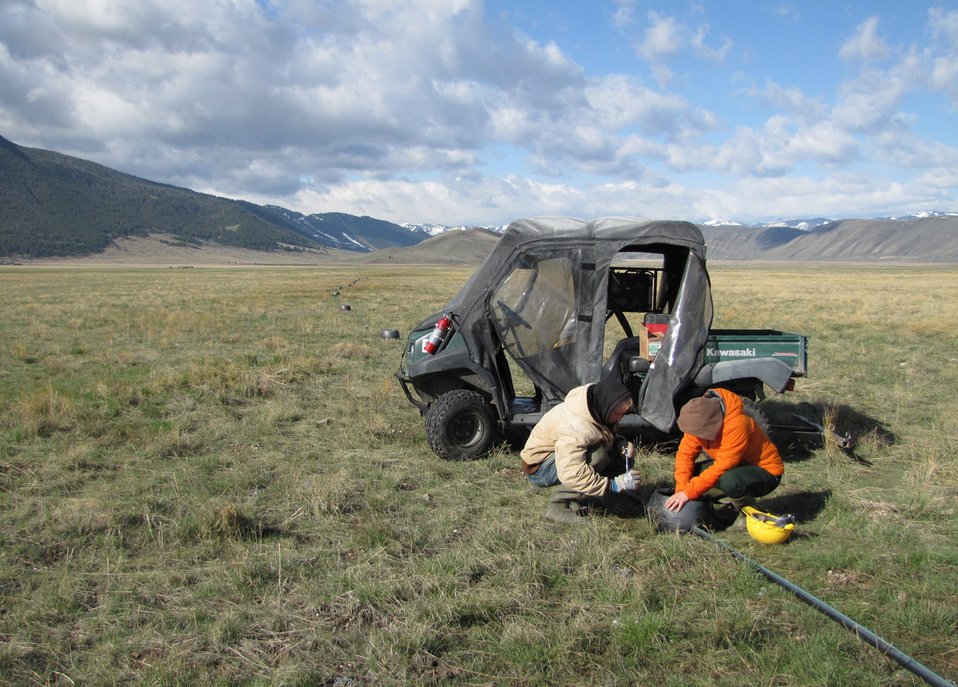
Making Repairs

Seasonal irrigators Nate Pasker and Haley Hueckman repair a K-Line sprinkler pod.